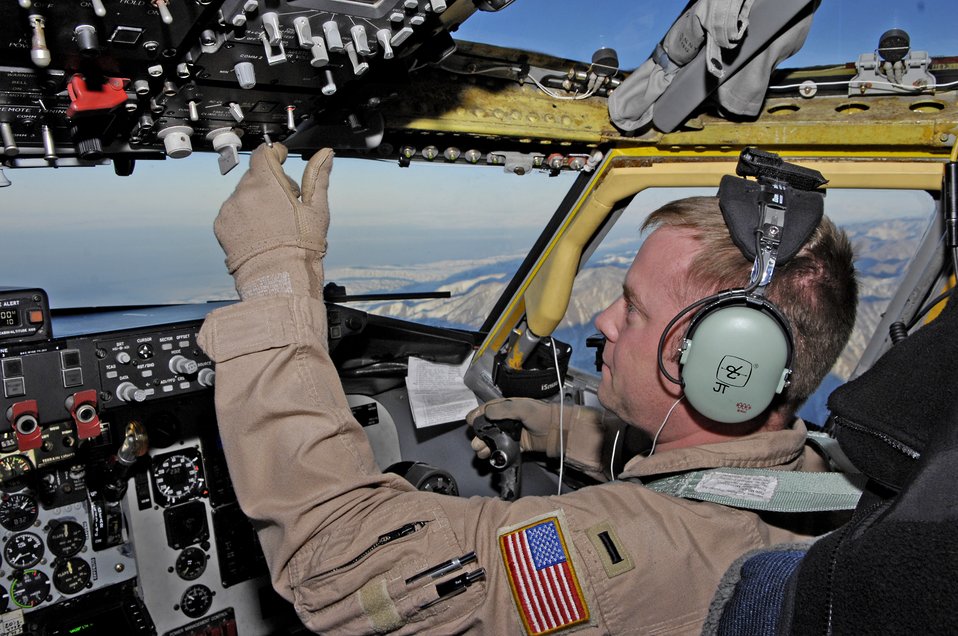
Fill'er up please!

1st Lt. Justin Tiffany, a co-pilot on a KC-135 Stratotanker, flies over the mountains of Afghanistan as he heads back to base after refueling a B-1B Lancer. The 22nd EARS primarily refuels aircraft in and around Afghanistan. Lieutinant Tiffany is deployed with the 22nd Expeditionary Air Refueling Squadron at Manas Air Base, Kyrgyzstan. He is assigned to the 92nd Air Refueling Wing at Fairchild Air Force Base, Wash.,